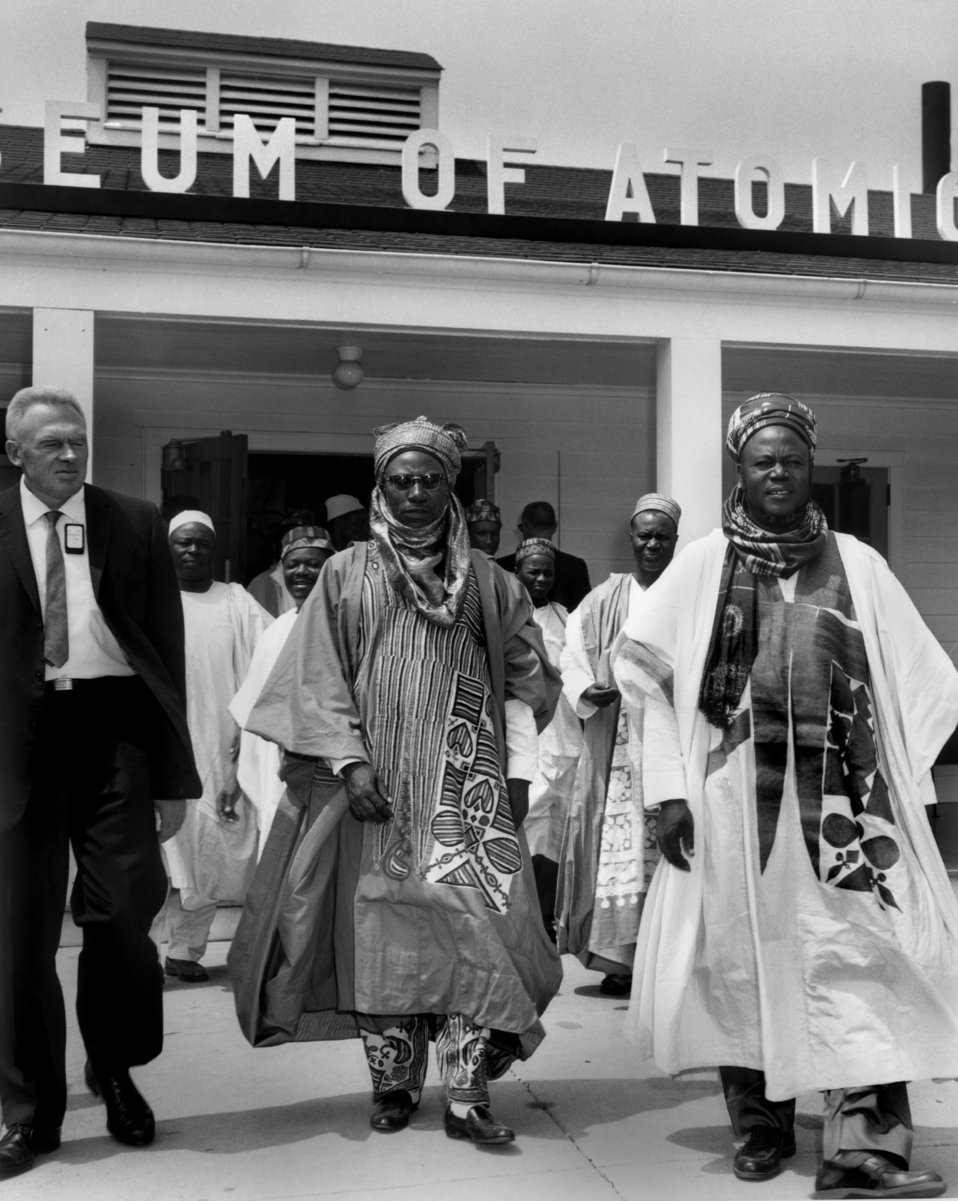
Premier of Nigeria Sir Ahmadu Bello far right leaving the Atomic Museum Oak Ridge

60-0719 DOE photo Ed Westcott
Premier of Nigeria Sir Ahmadu Bello far right leaving the Atomic Museum Oak Ridge Tennessee 7-22-1960